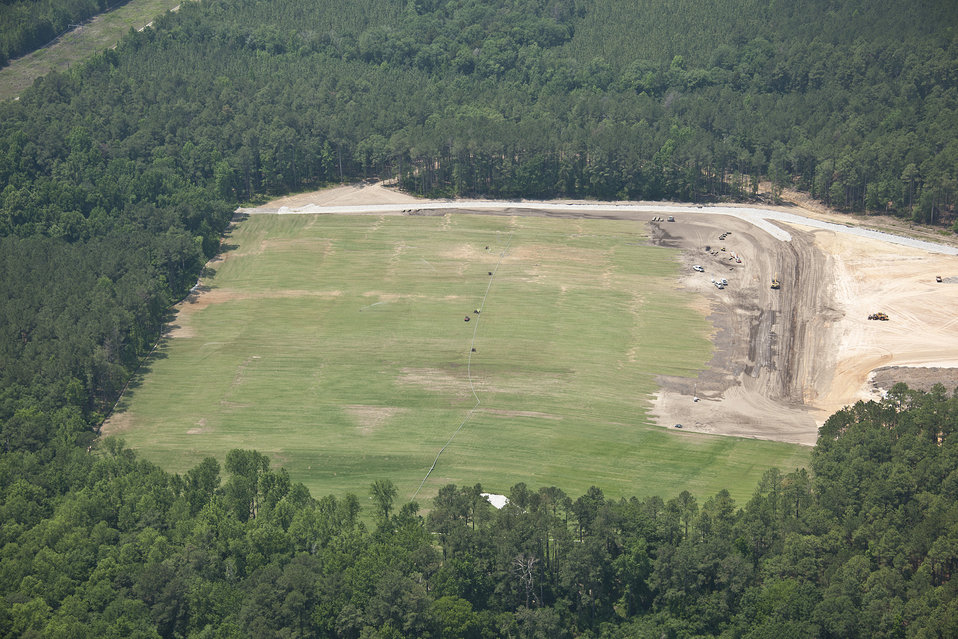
May 2011: P Ash Basin - After

At the P Area Ash Basin, Recovery Act workers removed about 35 acres of vegetation on and around the 14-acre manmade earthen basin to prepare for remediation. Next, they consolidated ash inside the basin that had spread in the area from former P Area Powerhouse operations, which ended in 1991. Workers then prepared a clean soil and sod cover, and planted seedlings.
The vegetative layer prevents precipitation from infiltrating the basin’s ash residues and entering the groundwater. About 1,500 feet of erosion-control fencing also was installed.